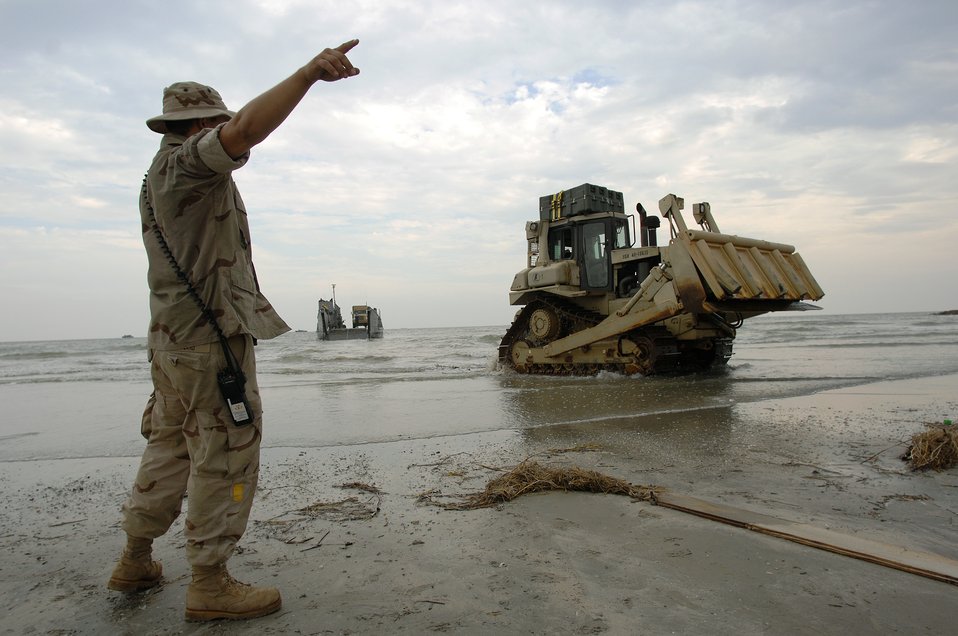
USS Nassau delivers critical help to Galveston

Seaman Gregory Newland directs a utility landing craft from the amphibious assault ship USS Nassau onto the beach near the port of Galveston, Texas to begin disaster relief efforts Sept. 18. The Nassau is anchored off Galveston to provide disaster response and aid to civil authorities as directed in the wake of Hurricane Ike. Seaman Newland is assigned to Beachmaster Unit Two.